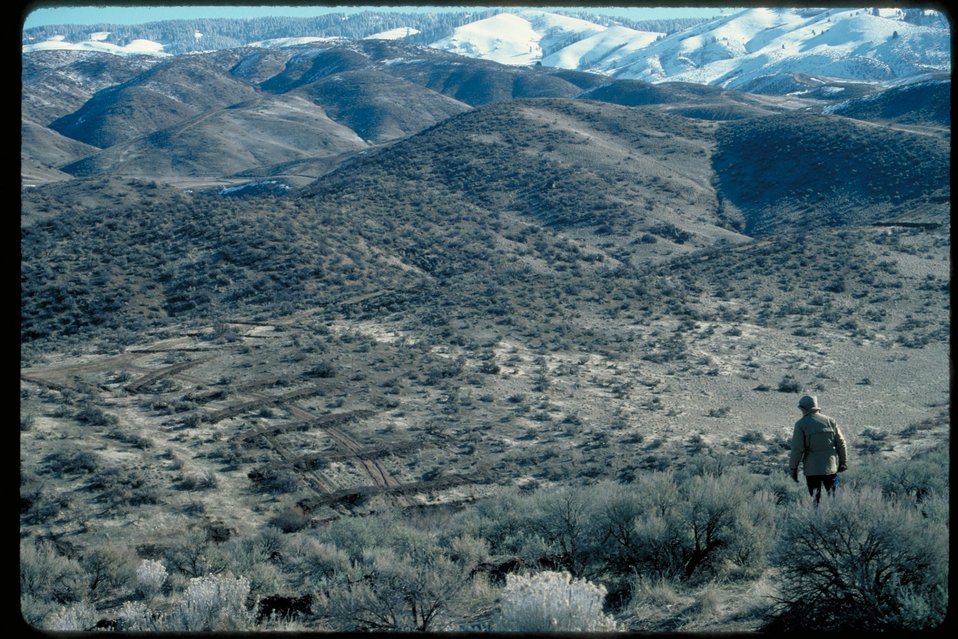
Boise Front Four Rivers Field Office LSRD Lower Snake River District